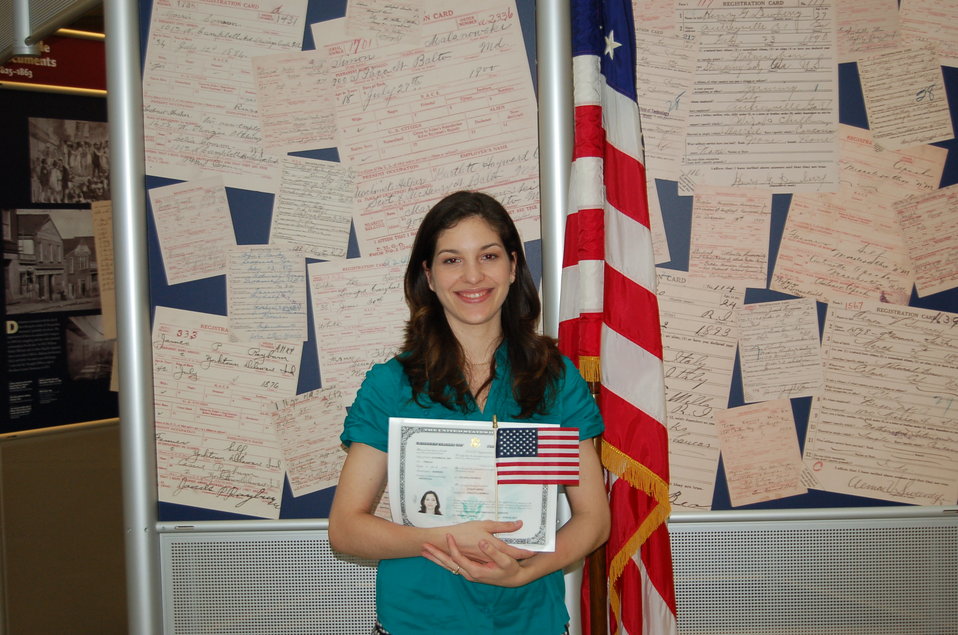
New Citizens